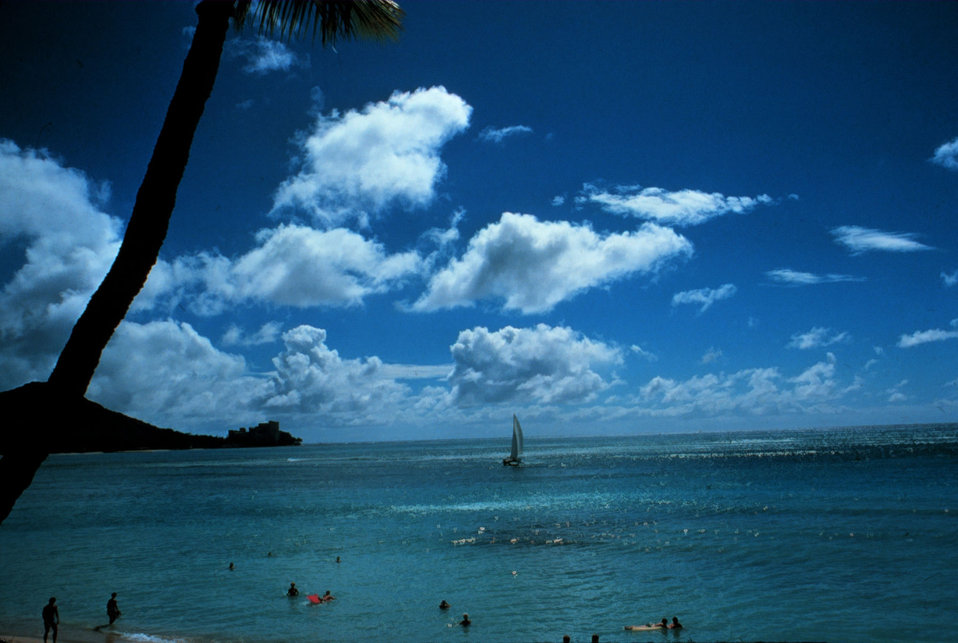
Fair weather cumulus